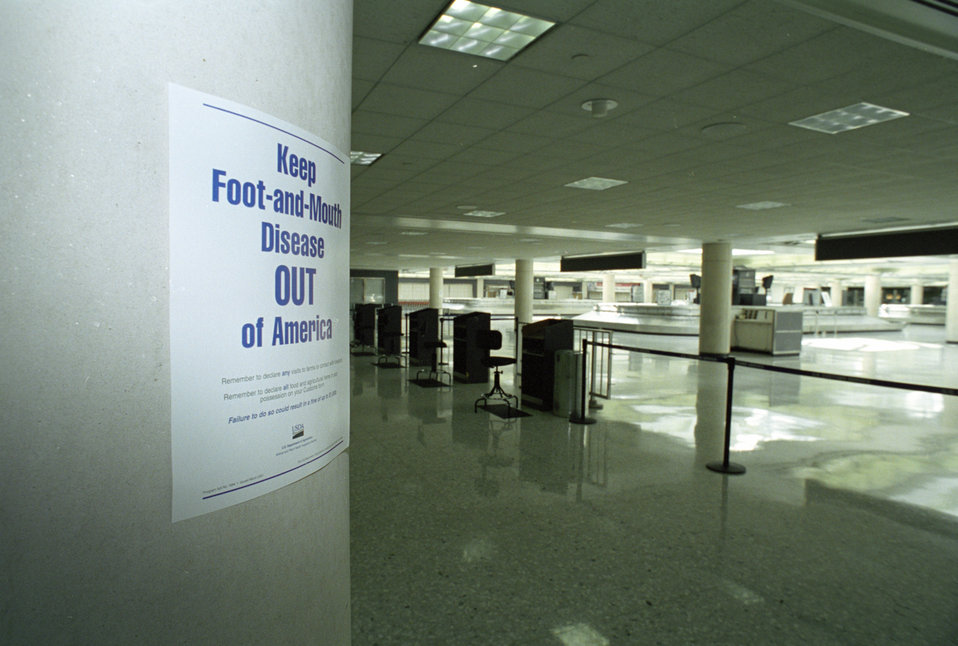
A warning sign about Foot and Mouth Disease is posted in the international travelers area at Washington Dulles International Airport in Chantilly, VA on March 14, 2001. Foot and Mouth Disease can be brought into the U.S. through contraband food and from travelers’ shoes. American tourists and European visitors that have trod through contaminated fields risk bringing the devastating disease into this country. The U.S. Department of Agriculture’s (USDA) Animal and Plant Health Inspection Service (APHIS) working with U.S. Customs and Border Protection carefully monitor incoming visitors and returning American tourists.